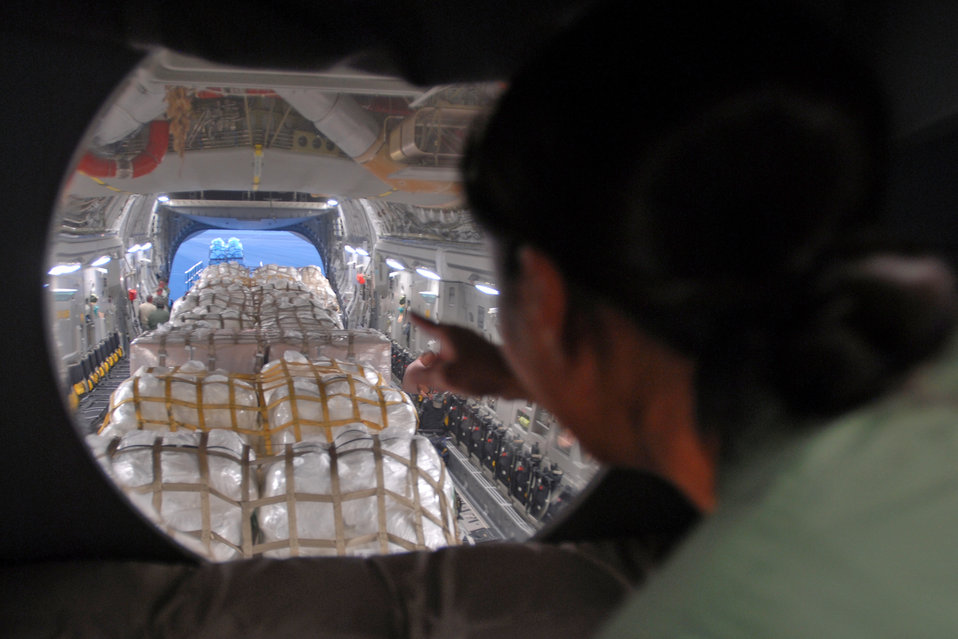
Humanitarian aid bound for tsunami relief effort

Capt. B.J. Itoman watches as humanitarian aid supplies from the Federal Emergency Management Agency is loaded by Hawaii Air National Guard, Hawaii National Guard and Hickam Air Force Base active-duty Airmen into a C-17 Globemaster III bound for American Samoa to assist in the relief efforts under way Sept. 30, 2009, at Hickam AFB, Hawaii. The efforts are in the wake of tsunamis triggered by an undersea earthquake Sept. 29 that has left more than 140 people dead in the South Pacific region. More than 90 Airmen and Soldiers deployed from Hawaii for the humanitarian mission. Captain Itoman is a Hawaii Air National Guard C-17 pilot.